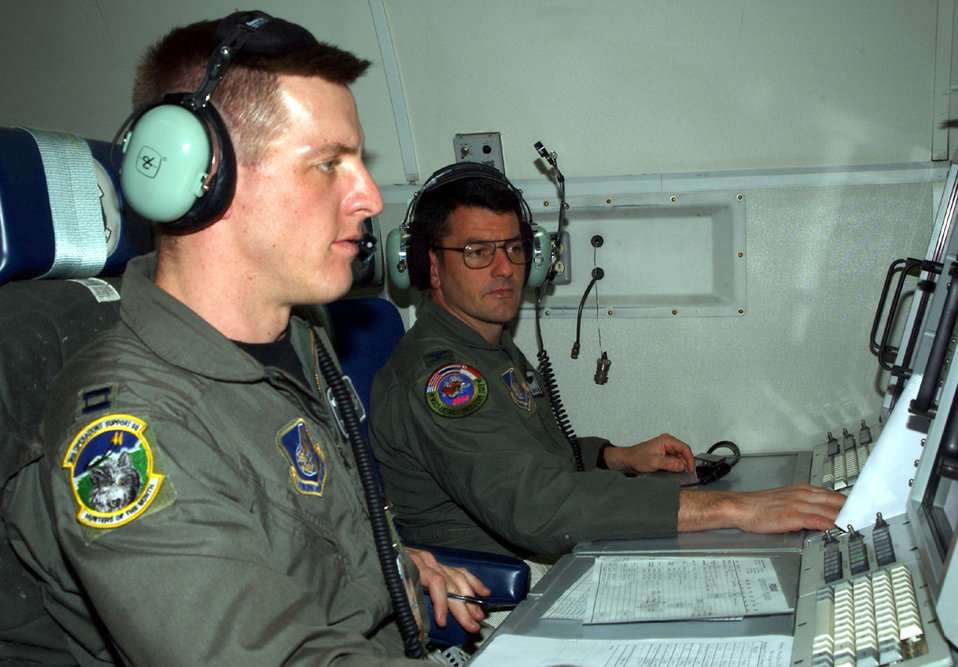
Controlling the sky

KORAT ROYAL THAI AIR FORCE BASE, Thailand -- Capt. Trevor Kimbal (left) monitors aircraft traffic from his station on an E-3 Sentry during a Cope Tiger '04 mission while Col. Russ Handy looks on. Airborne Warning and Control System aircrews are flying up to 10-hour missions to control the sky during the annual joint/combined multilateral exercise here. Captain Kimbal is assigned to the 962nd Airborne Air Control Squadron at Elmendorf Air Force Base, Alaska. Colonel Handy is the 3rd Operations Group commander at Elmendorf.